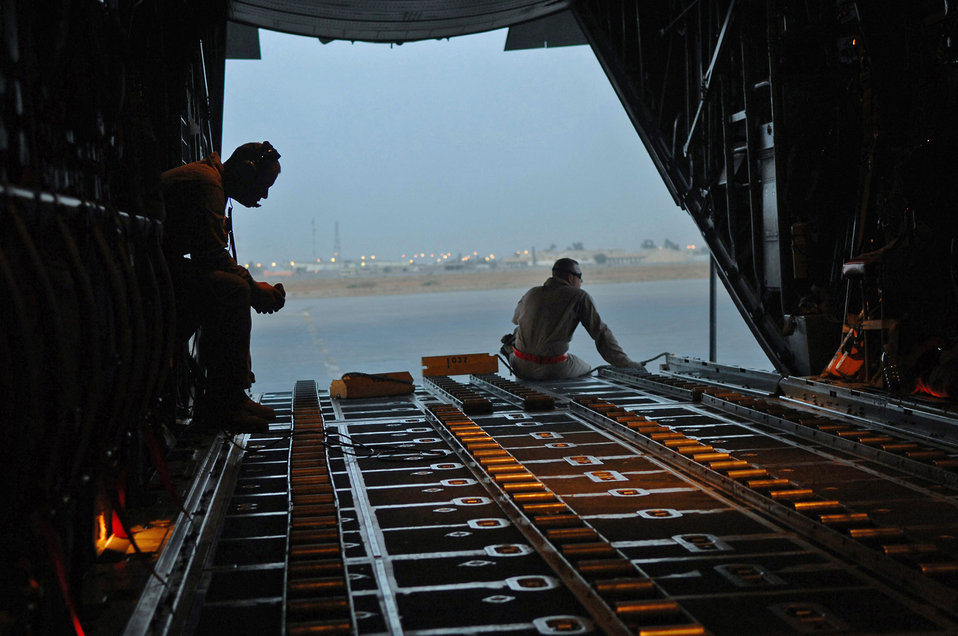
Herculean support for convoys

Airman 1st Class Nicholas Ellwood and Staff Sgt. Ronnie James wait for cargo and passengers to be loaded onto a C-130 Hercules during a combat mission May 7 at Balad Air Base, Iraq. Members of the 777th Expeditionary Airlift Squadron help prevented convoy vehicles and servicemembers from traveling along improvised explosive device-laden Iraqi roads by airlifting troops and supplies throughout the area of operations. Airman Ellwood and Sergeant James are 777th EAS loadmasters deployed from Little Rock Air Force Base, Ark.